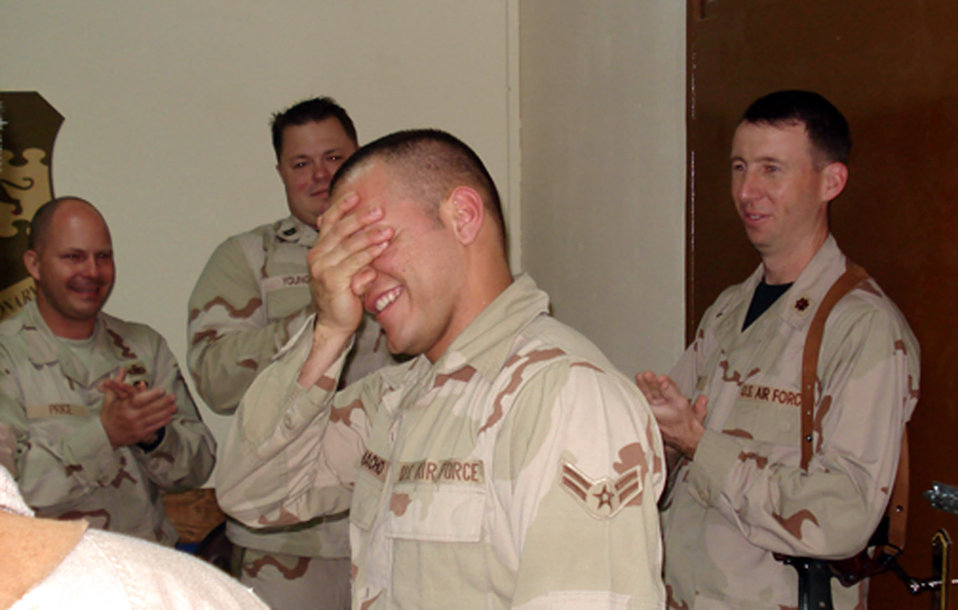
Venezuelan's dreams soaring to new heights in Air Force

Airman 1st Class Edward Camacho reacts with disbelief after Brig. Gen. Robin Rand, the 332nd Air Expeditionary Wing commander, notified him of his selection to the U.S. Air Force Academy Preparatory School in Colorado. Airman Camacho, a supply technician deployed from Aviano AB, Italy, to the 332nd Expeditionary Logistics Squadron at Balad, Iraq, emigrated in 2004 from Venezuela to America in hopes of becoming an officer, pilot and ultimately an astronaut. The surprise announcement at the wing's daily update brief moves him one step closer to realizing those goals.